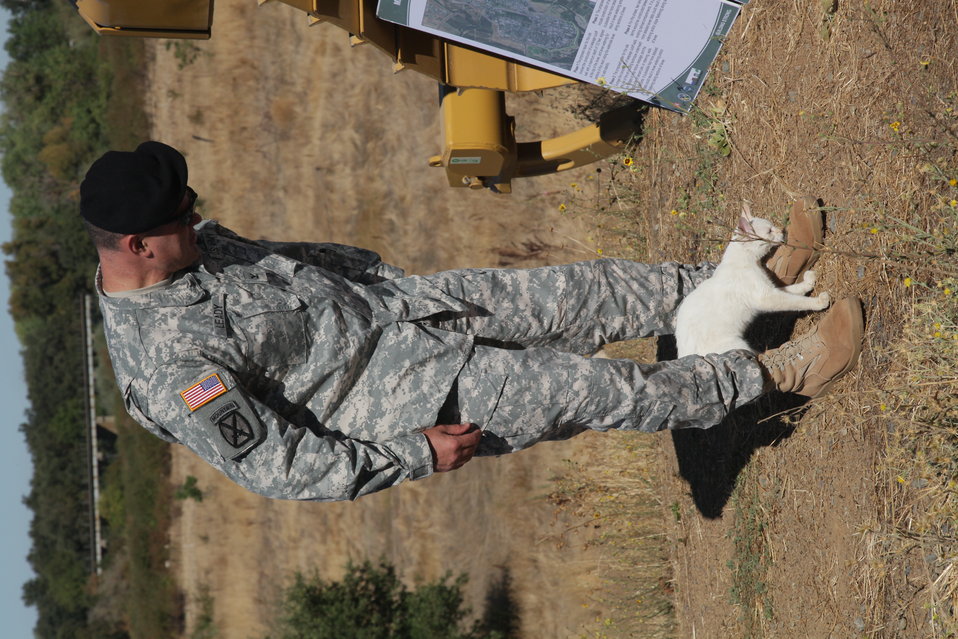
MARYSVILLE, Calif. (Sept. 20, 2010) -- Col. Bill Leady, commander of the U.S. Army Corps of Engineers Sacramento District, takes a moment to acknowledge a feline attendee of a ground-breaking ceremony for the Marysville Ring Levee in Marysville, Calif., Sept. 20. The $10.8 million project, funded by the American Recovery and Reinvestment Act of 2009, reflects a remarkable level of collaboration by local, state and federal agencies. “Reducing this storied city’s flood risk is a priority mission for the Corps of Engineers,” said Leady.